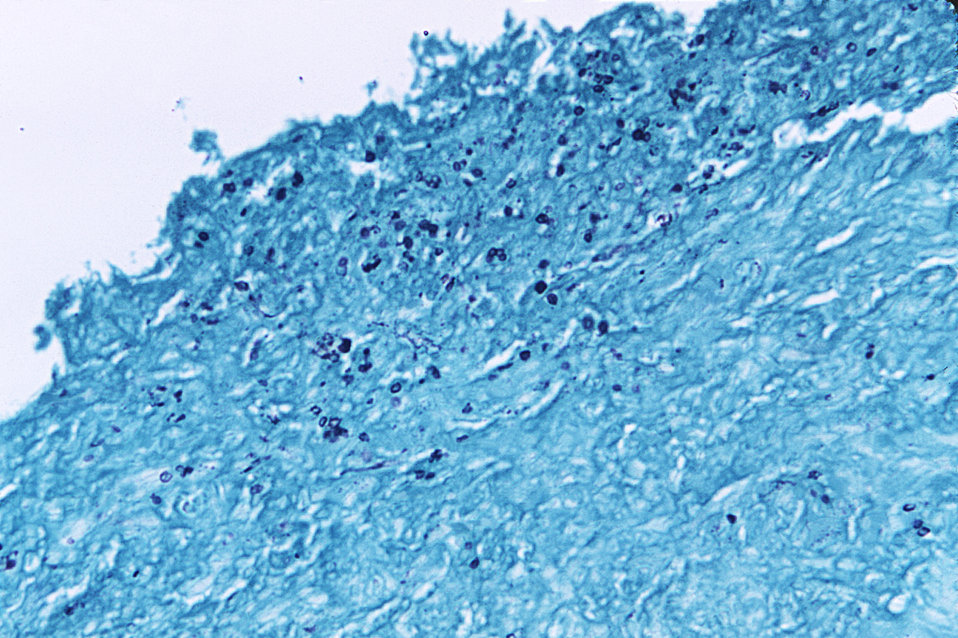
Magnified 300X, this photomicrograph revealed the presence of Histoplasma capsulatum fungal organisms in an unidentified tissue sample.What is histoplasmosis?